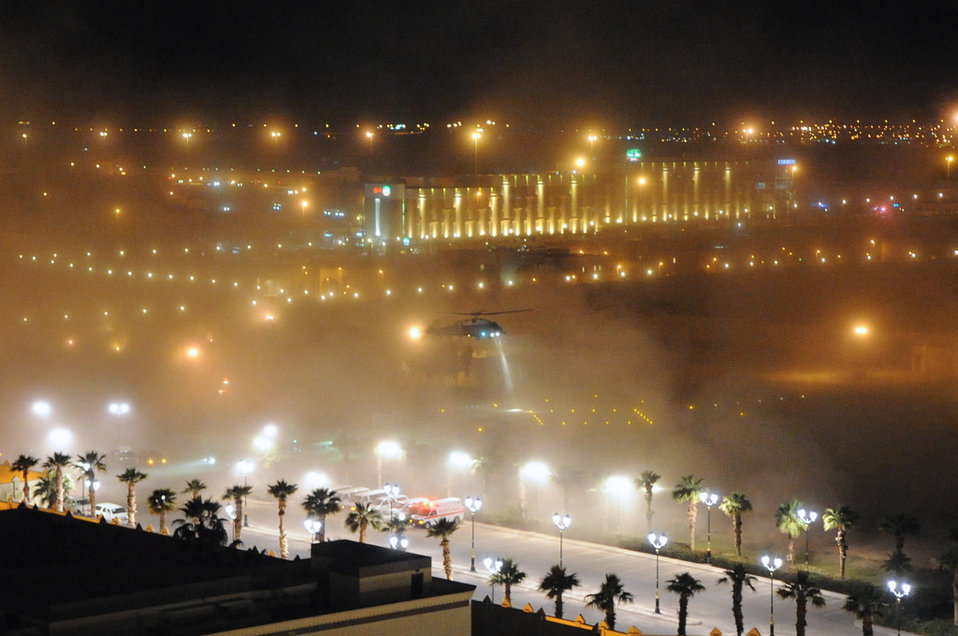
Marine One Ferries President Obama, Secretary Kerry After Meeting With King Abdullah of Saudi Arabia

Marine One kicks up a cloud of sand as it prepares to land in Riyadh on March 28, 2014, after carrying President Obama and U.S. Secretary of State John Kerry back from a meeting at a desert encampment with King Abdullah of Saudi Arabia.